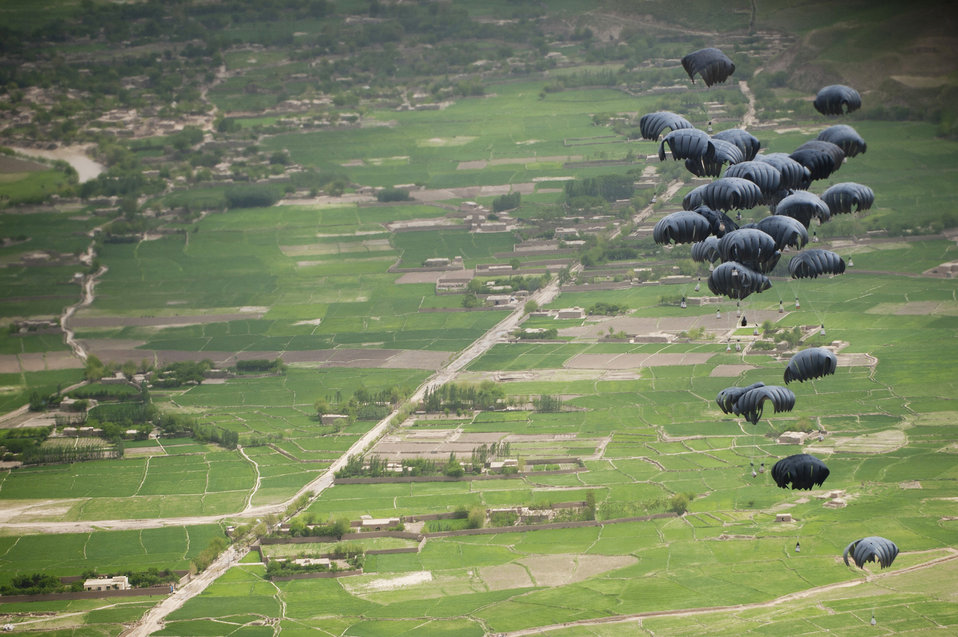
Air delivery mission

Aerial delivery cargo drops April 15, 2011, above Afghanistan.